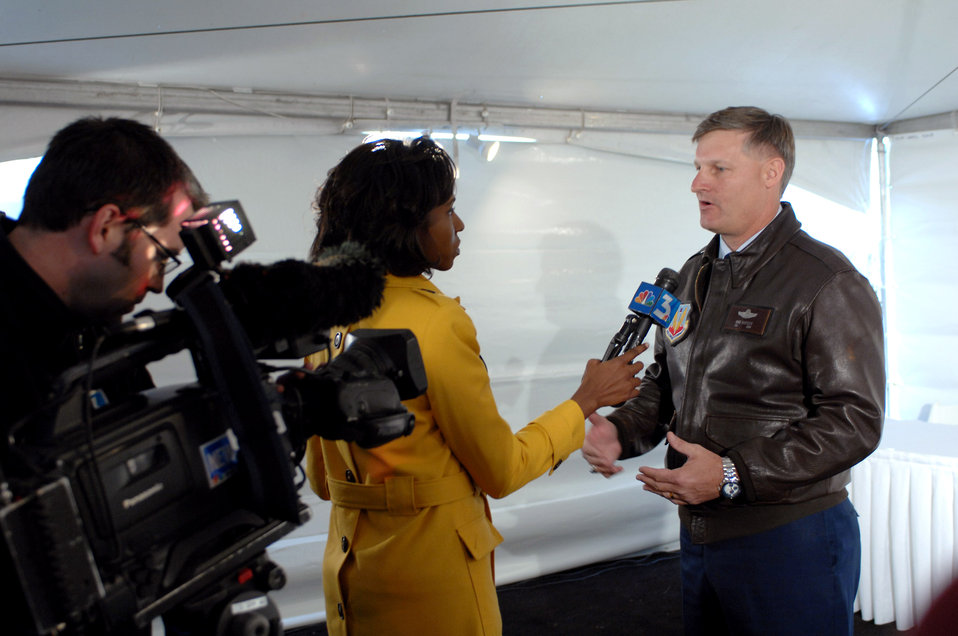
Solar power groundbreaking ceremony

Col. Michael Bartley discusses the benefits to the Air Force of the new solar power system that is being built to supply renewable energy to Nellis Air Force Base, Nev., during an interview April 23. The solar power plant, scheduled for completion in early 2008, will be the largest photovoltaic project in North America. The power plant will produce approximately 15 megawatts of power and provide more than 25 percent of the electricity demand on the base. Colonel Bartley is the 99th Air Base Wing commander at Nellis.